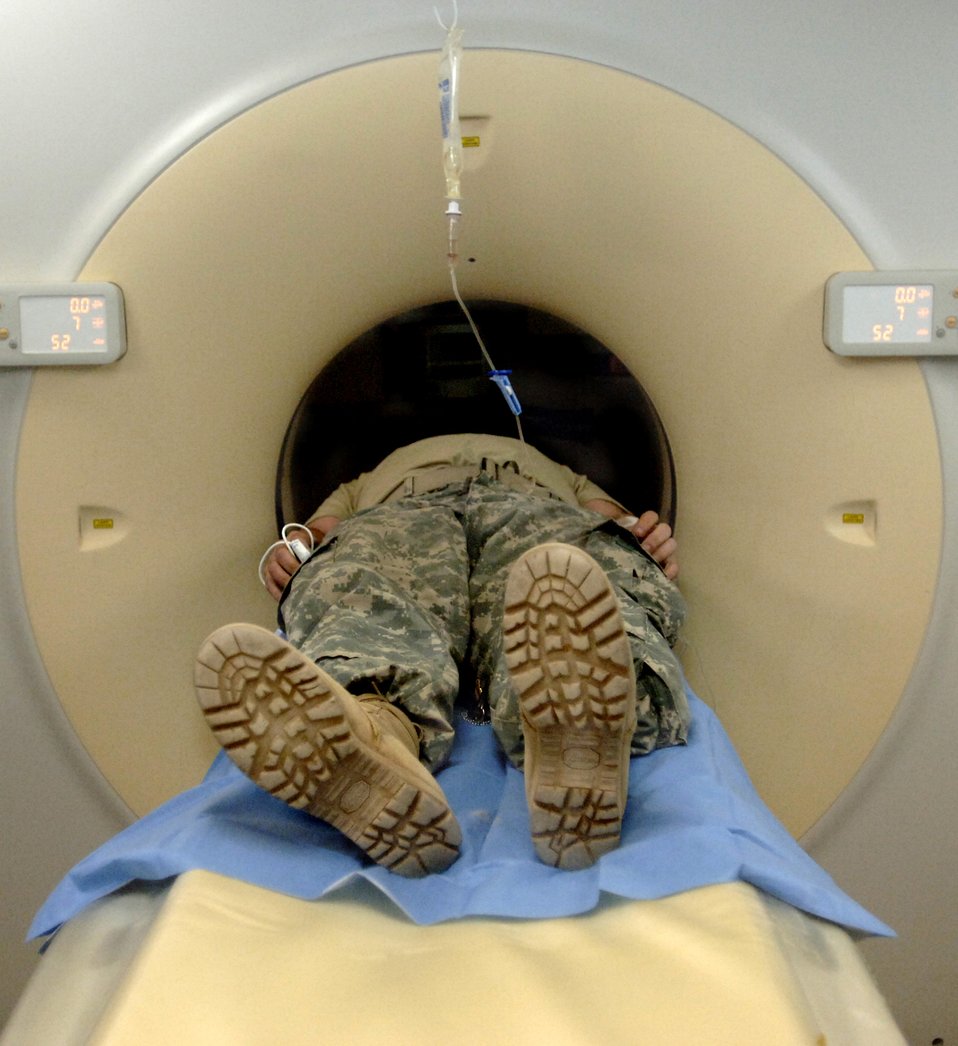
Radiology staff provides reliable, rapid response in Iraq

A Soldier goes through a CT scan at the Air Force Theater Hospital Feb. 19 at Balad Air Base, Iraq. The radiology staff has two new 16 slice CT scanners that expedite the process from 90 minutes to about 10 minutes.